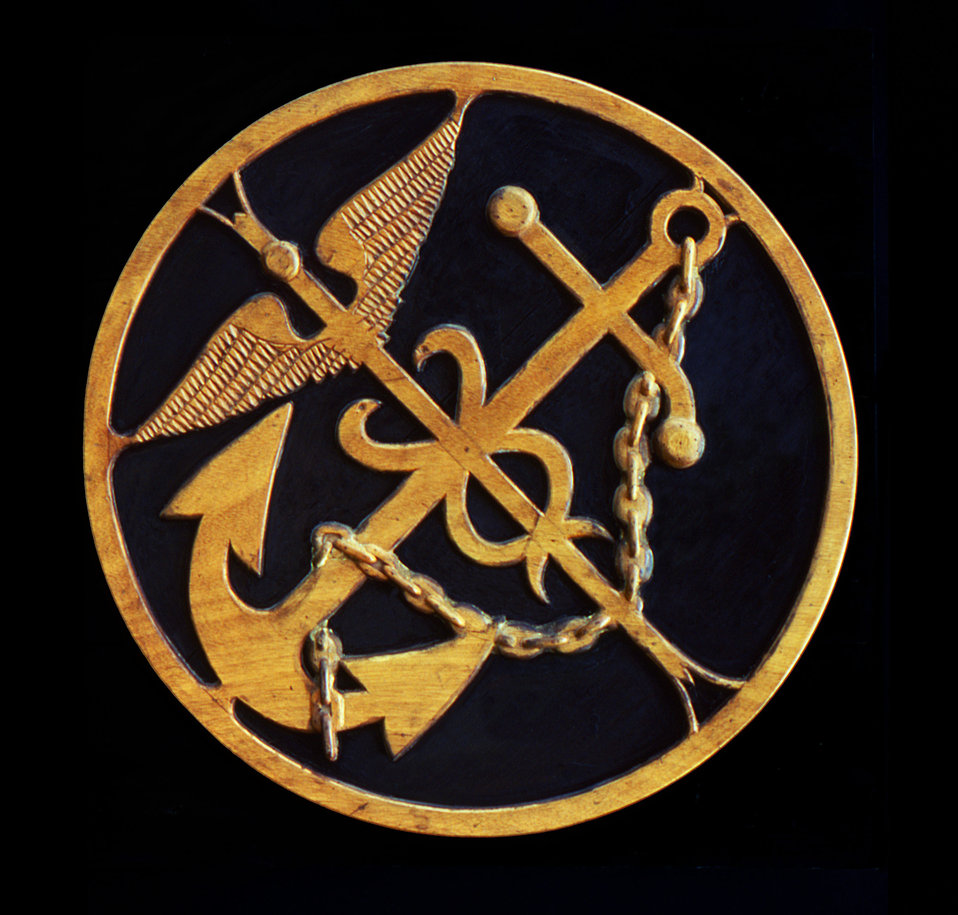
This golden emblem represents the United States Public Health Service, USPHS, Commissioned Corps.